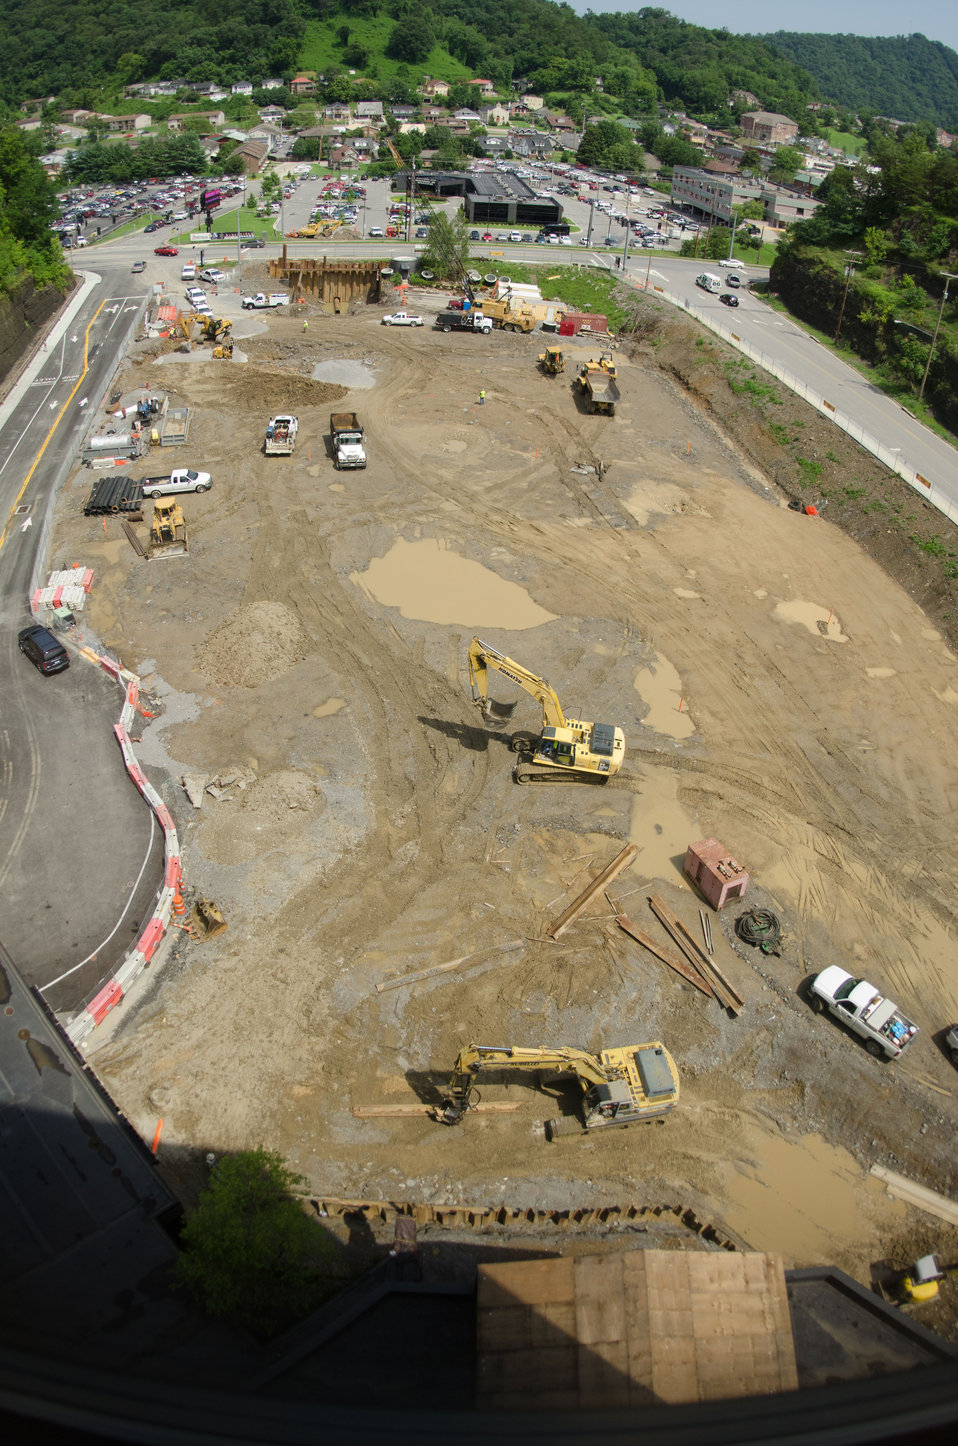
From the Pikeville Medical Center building, a portion of the U-shaped town of Pikeville can be seen beyond the above ground construction phase (foreground) of the Pikeville Medical Center (PMC) expansion project, on Tuesday, July 12, 2011, in Pikeville, KY. Some of the property has been cut into the mountainside. The construction area is where the parking garage will be; eliminating the long walk patients have to overcome to get from the current parking lot to the main medical center. After months of infrastructure construction and rain delays, one of Kentucky’s largest American Recovery and Reinvestment Act (ARRA) projects is under way. The $44.6 million Community Facilities Loan will finance construction of a new medical office building and parking garage. The new medical office building will house outpatient surgery, endoscopy and surgical support and provide exam, waiting and office space for 23 primary and specialty care physicians. It also will contain a medical research center to support existing research – in conjunction with Pikeville College – on health disparities, genetic research related to the prevalence of cancer and other areas, including drug and treatment trials. The new seven-floor parking garage with more than 1,000 spaces will be built adjacent to the new medical building. This will eliminate the need to shuttle patients back and forth from remote parking areas, as the center’s current parking areas are filled to capacity on a daily basis. The new garage will provide closer and easier proximity to medical and hospital services for all patients.
Wayne Rutherford, County Judge-Executive for Pike County, says funding from ARRA is a boon for his county because it will create jobs.
“This is great for Pike County’s economy. We know we have a great hospital, and with this support, it will be even better,” said Rutherford. “The unemployment rate here is above the state average and this will stimulate jobs. There will be construction, which means lots of jobs on the front end – and even more once it is built.”

Pike County is one of Kentucky’s persistent poverty counties and the current medical facility provides health care services for a rural population of more than 68,000. This project will create 1,430 direct and indirect construction jobs, in addition to 97 long-term jobs. It is scheduled to be completed in December 2012.

“This project is a prime example of the ARRA monies being utilized for much-needed health care facility expansion in an economically-depressed region of Eastern Kentucky and Appalachia,” said Tom Fern, State Director for Rural Development in Kentucky. “This hospital has received national recognition for its quality of care, and this money will allow them to expand and build upon their success and continue providing quality health care services to the region.”
PMC was named National Hospital of the Year by the American Alliance of Healthcare Providers in November 2009. The hospital was among 400 elite health care facilities to apply for this prestigious honor. To earn this recognition, PMC competed against more than 400 hospitals, including the Mayo Clinic, the John Hopkins Hospital, Cedar-Sinai Medical Center, the Cleveland Clinic, Duke University Medical Center and Vanderbilt University.
Pikeville City Manager Donovan Blackburn said the medical center is the largest employer in Pikeville and contributes nearly $2 million to the city through the payment of occupational taxes. He went on to say that Pikeville Medical’s success is also the city’s success because as other cities struggle with dwindling revenues, Pikeville has actually seen growth.
“This is a regional medical center that is very important to the city. Pikeville is a legal, financial and education hub for Eastern Kentucky and a gateway to rural communities in Virginia and West Virginia. There are half a million within a 50-mile radius – so it’s not just local people that depend on this facility,” said Blackburn. “From a regional standpoint it adds volume from a jobs standpoint. Everybody in this county knows someone or has family that works for Pikeville Medical Center.
“People in this area used to have to go out of the area for good jobs and quality medical services, but Pikeville Medical has changed that,” added Blackburn. 'And it has impact on other parts of the city’s economy – hotels, restaurants and retail. It increases the quality of life tenfold.”

The Recovery Act was designed to spend money gradually over time in order to sustain a true recovery – with peak spending to occur early this year. While the experts agree that ARRA is already responsible for creating or saving approximately two million jobs, about 75 percent of recipients that reported on their Recover Act spending indicated their projects are less than half complete, meaning there is even more job impact from those dollars to come.